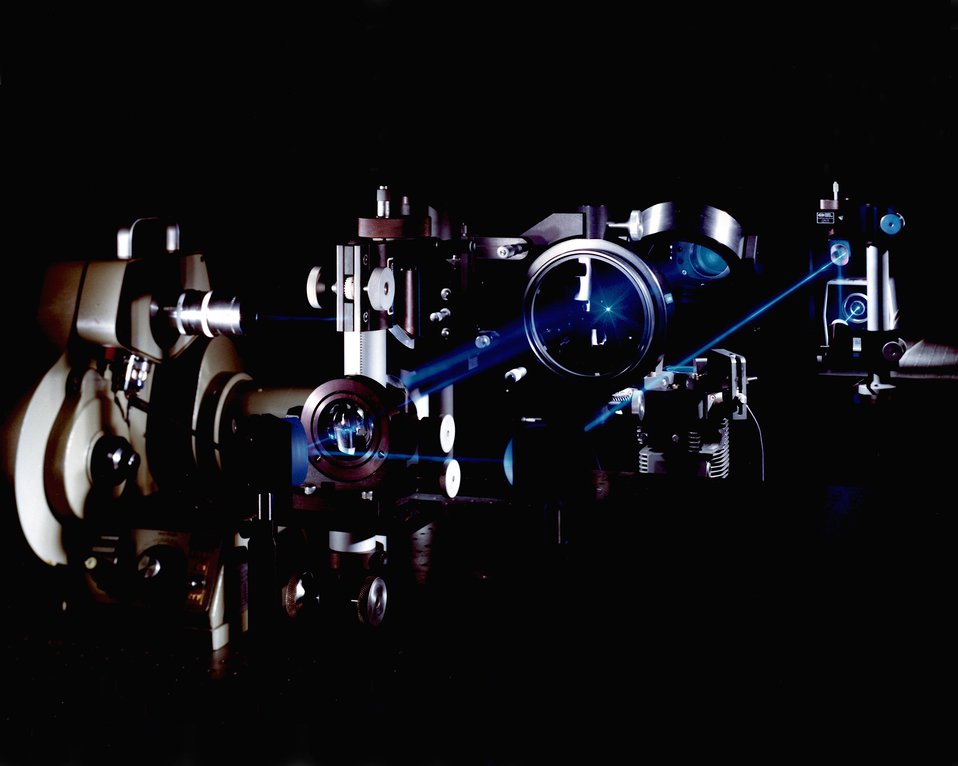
RAMAN SPECTROSCOPY USED TO ANALYZE FUEL-AIR RATIOS IN AN ENGINE.

SYSTEMS WITH BEAMS ARE DISTRIBUTED TO 14 INDIVIDUAL LABORATORIES. EACH LABORATORY IS SERVED BY A MINICOMPUTER WHICH IS CONNECTED TO A CENTRAL DATA SYSTEM. IN ADDITION TO BENCH-TOP FLAME STUDIES, THE FACILITY HOUSES SEVERAL MAJOR COMBUSTION EXPERIMENT LABS, INCLUDING FIVE OPTICALLY PORTED RESEARCH ENGINES, A COMPUTER-CONTROLLED COMBUSTION BOMB, AND LOW-PRESSURE FLAME, COAL FLAME, AND TURBULENT FLAME LABORATORIES. THESE STUDIES COULD LEAD TO THE DESIGN OF HEAT ENGINES AND ENERGY SYSTEMS THAT BURN FUEL MORE EFFICIENTLY WHILE CREATING LESS POLLUTION.